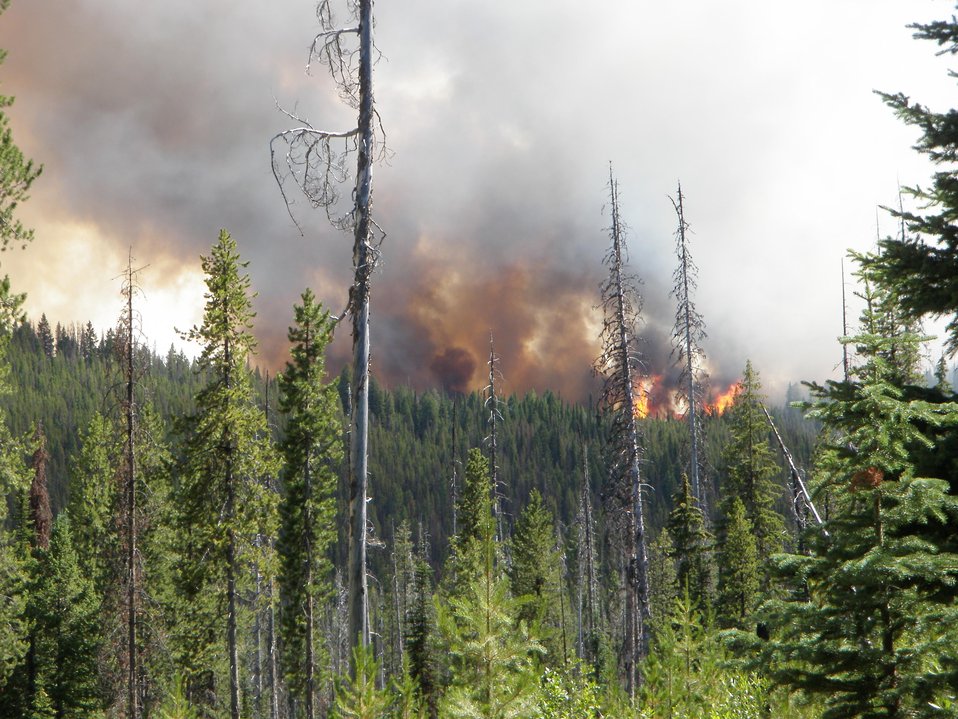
The Gold Pan Fire in the Bitterroot National Forest near Conner, MT began by lightning on Jul. 16, 2013 by lighting have consumed approximately 16,330 acres.